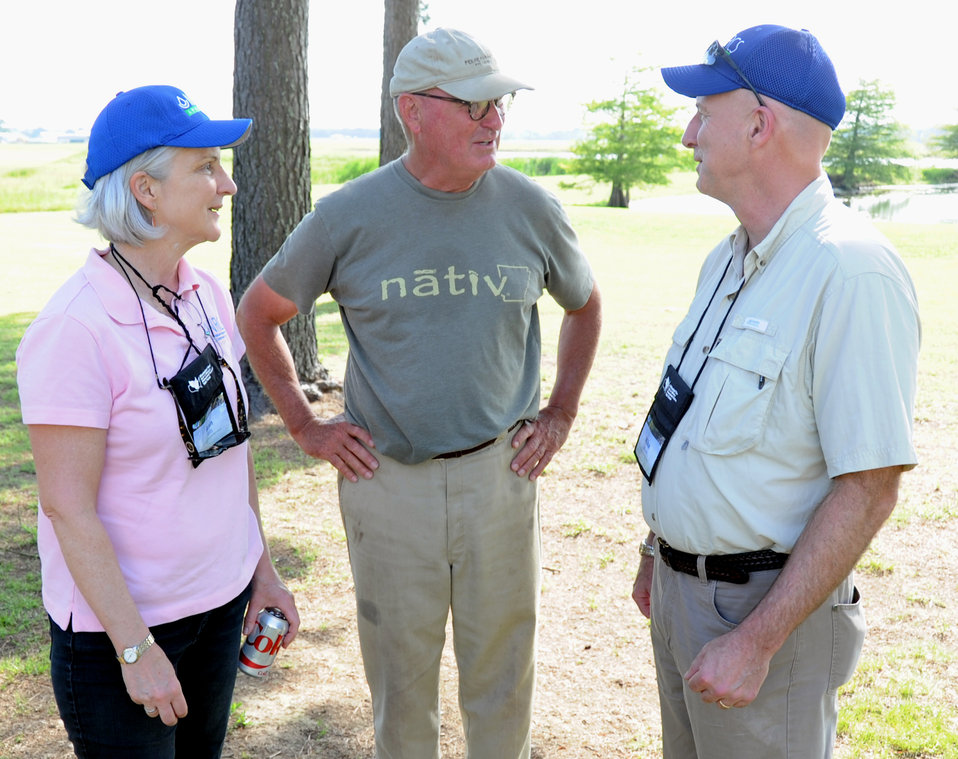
Mills 4

U.S. Department of Agriculture (USDA) Natural Resources and Environment (NRE) Deputy Under Secretary Ann Mills and USDA Natural Resources Conservation Service (NRCS) Arkansas State conservationist Mike Sullivan visit with David Felke about water quantity and soil health.